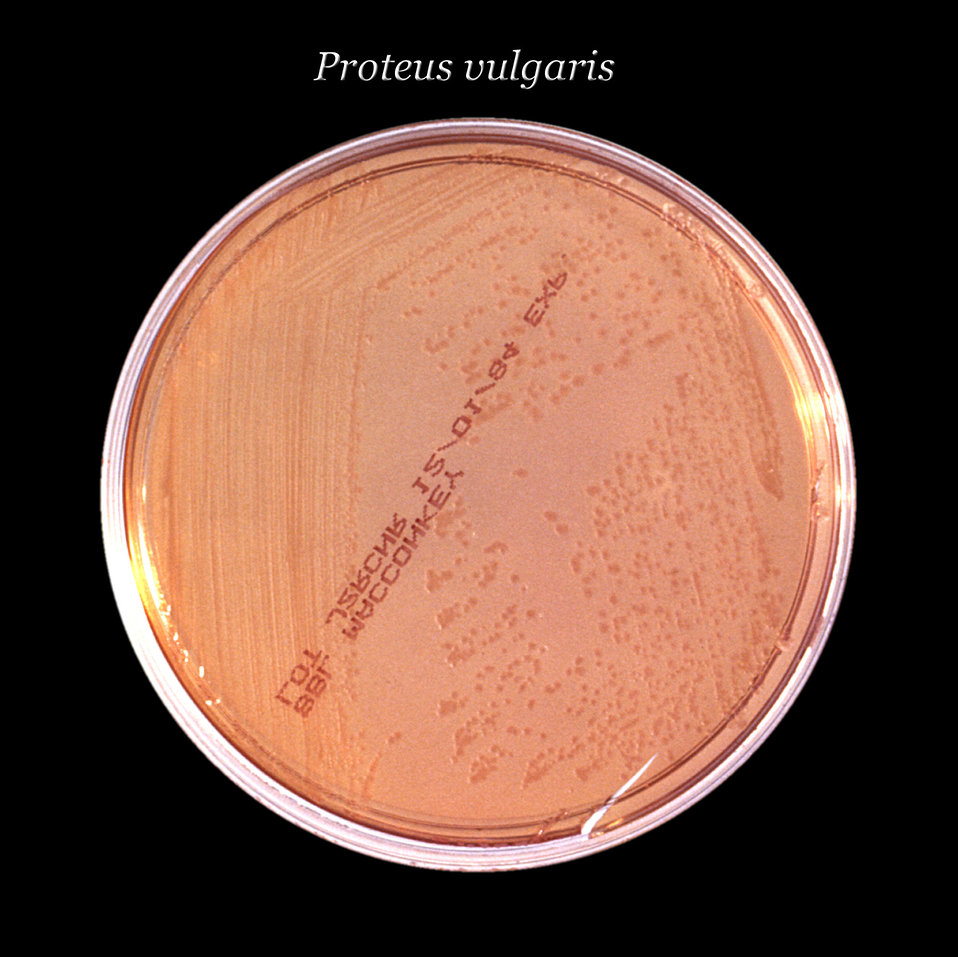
After 24 hours, this inoculated MacConkey agar culture plate cultivated colonial growth of Gram-negative, rod-shaped, and facultatively anaerobic Proteus vulgaris bacteria.